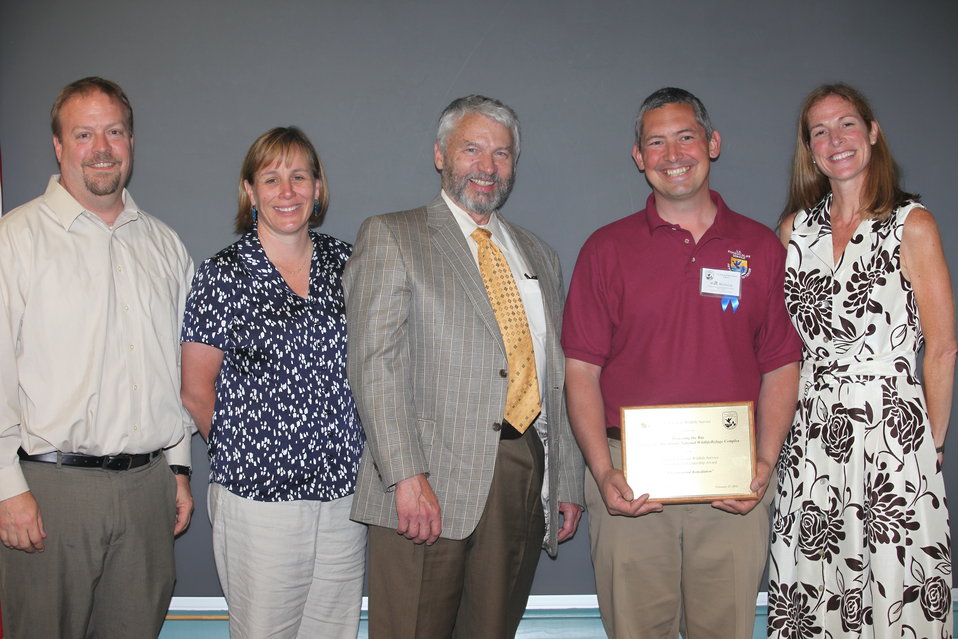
Northeast Region Employee Appreciation Awards

Biologist of the Year Matt Whitbeck with Refuge Chief Scott Kahan, Deputy Regional Director Deb Rocque, FWS Deputy Director Rowan Gould and Regional Director Wendi Webber.